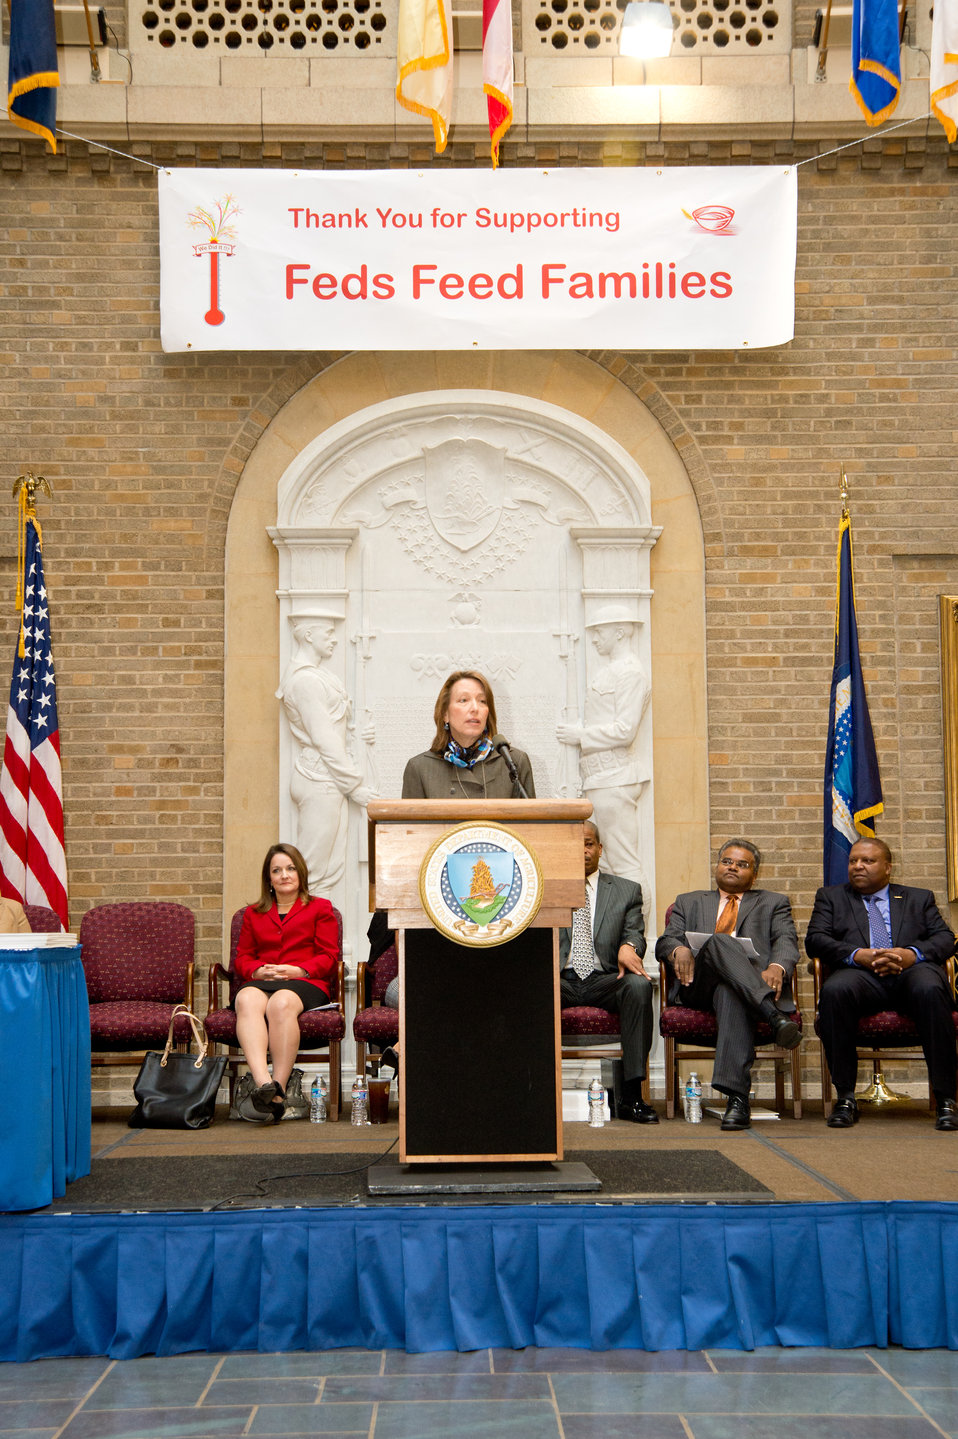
Nancy Roman, President and CEO, Capital Area Food Bank addresses employees and partner agencies at the United States Department of Agriculture (USDA), Feds Feed Families closing ceremony, on Wed., Nov. 13, 2013 in Washington, D.C. The Capital Area Food Bank an organization that works with 500 partner agencies to stop hunger in the Washington, D.C., metro area was a beneficiary of the effort of Federal employees nationwide to meet the challenge of the Feds Feed Families program. The program gathered 9 million pounds of food for food banks across the nation to assist families in need setting an all time record high.